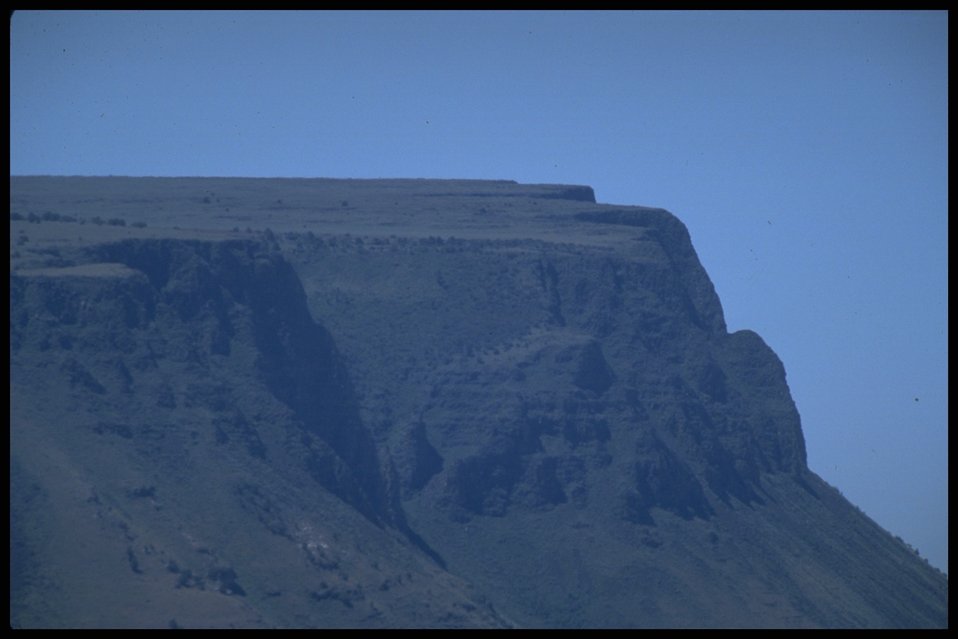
Abert Rim, Lakeview District.